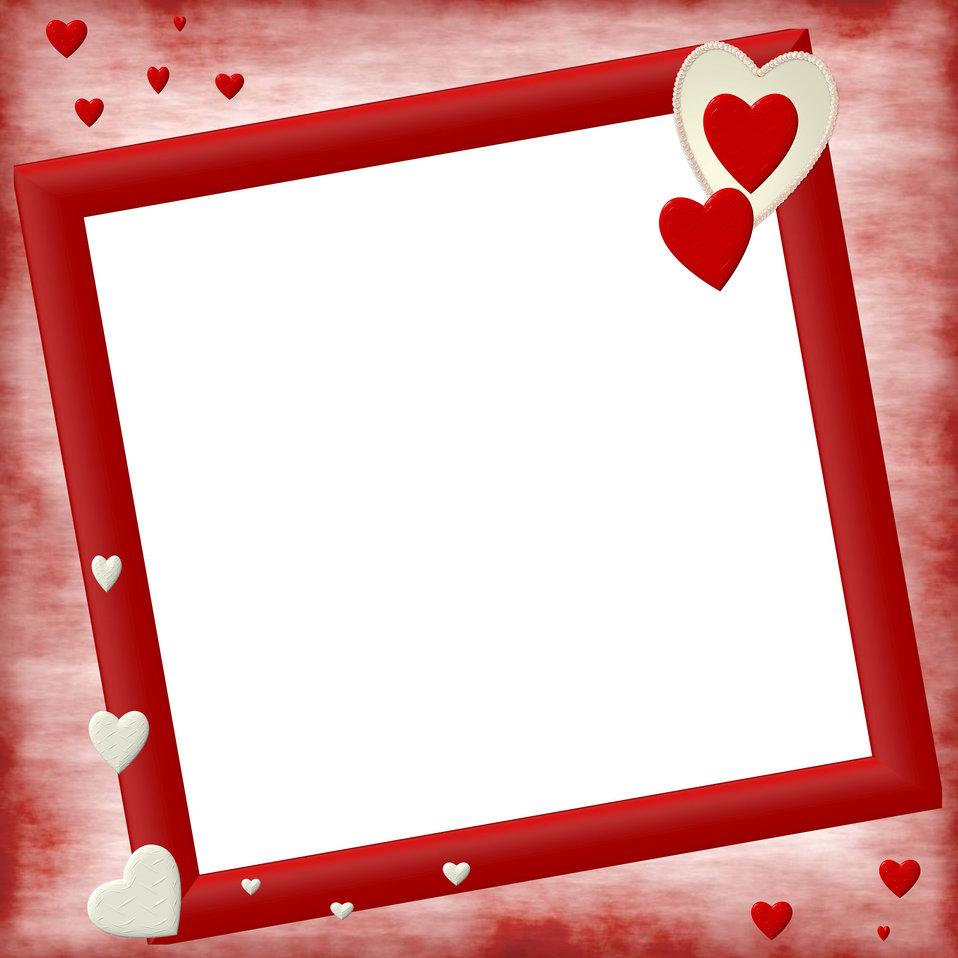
Valentine frame 2013 # 1

Valentine frame - 10" x 10" - 300 dpi.